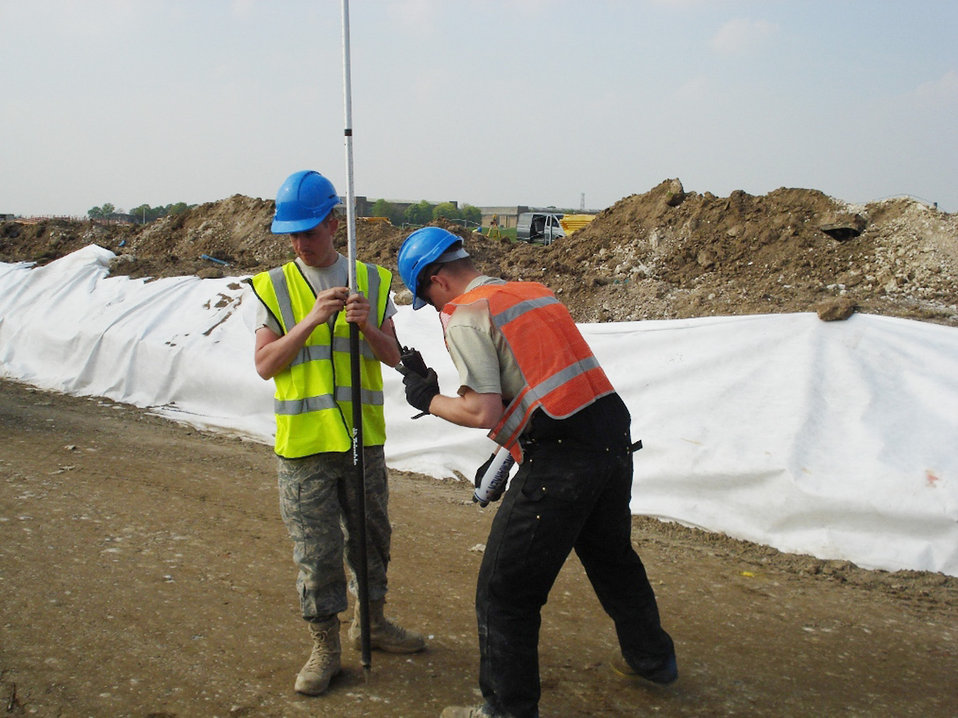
Civil engineers bring unique capability to USAFE

Staff Sgt. Ian Aeppli and Senior Airman Jacob Bailey conduct elevation checks during grading operations for a new perimeter road in July at Royal Air Force Feltwell, England. Sergeant Aeppli is an 86th Construction and Training Squadron Military Construction Flight utilities systems craftsman, and Airman Bailey is an 86th CTS/MCF pavements and equipment operator.